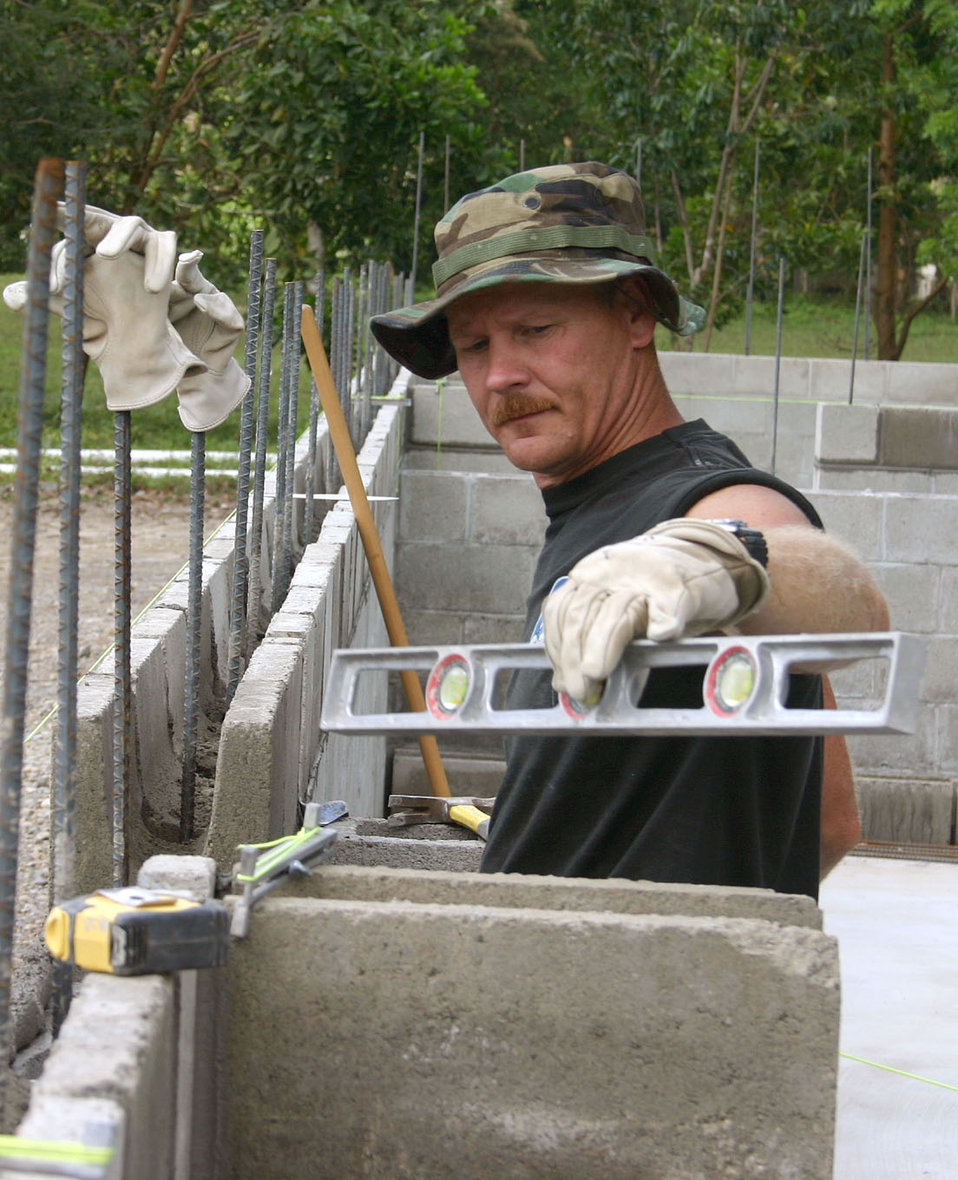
Alaskan team build school in Honduras

Senior Master Sgt. Mike Miller makes sure all concrete blocks are straight and level at the El Cacao school site. Sergeant Miller is one of 17 members deployed from the 354th Civil Engineer Squadron at Eielson Air Force Base, Alaska, to build a three-classroom school in the small village of El Cacao, Honduras, as part of New Horizons 2006-Honduras.